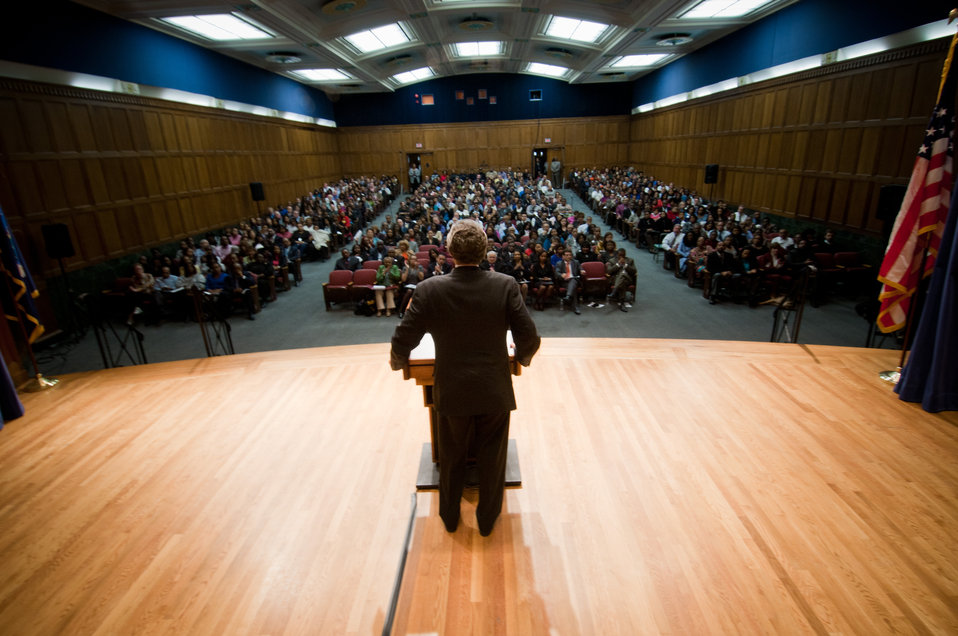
Reverend Al Sharpton, Jr. was the keynote speaker at the Department of Agriculture’s African American History Month Program, on Monday, February 28, 2011 in Washington, D.C. Rev. Sharpton’s topic was “Civil Rights in the Age of Obama.”